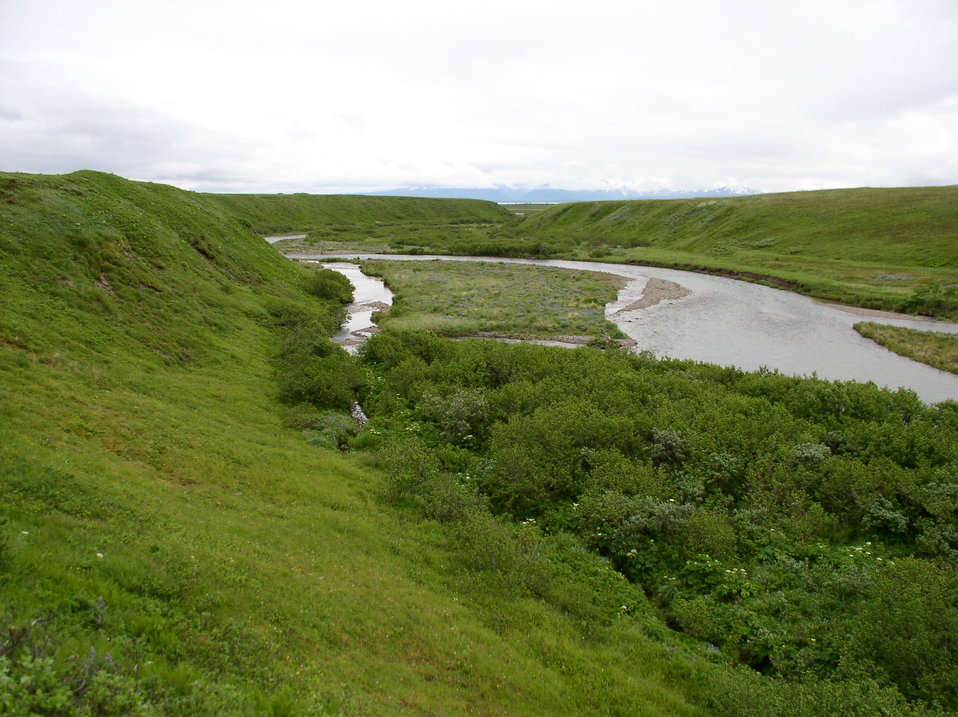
Russell Creek

Izembek National Wildlife Refuge